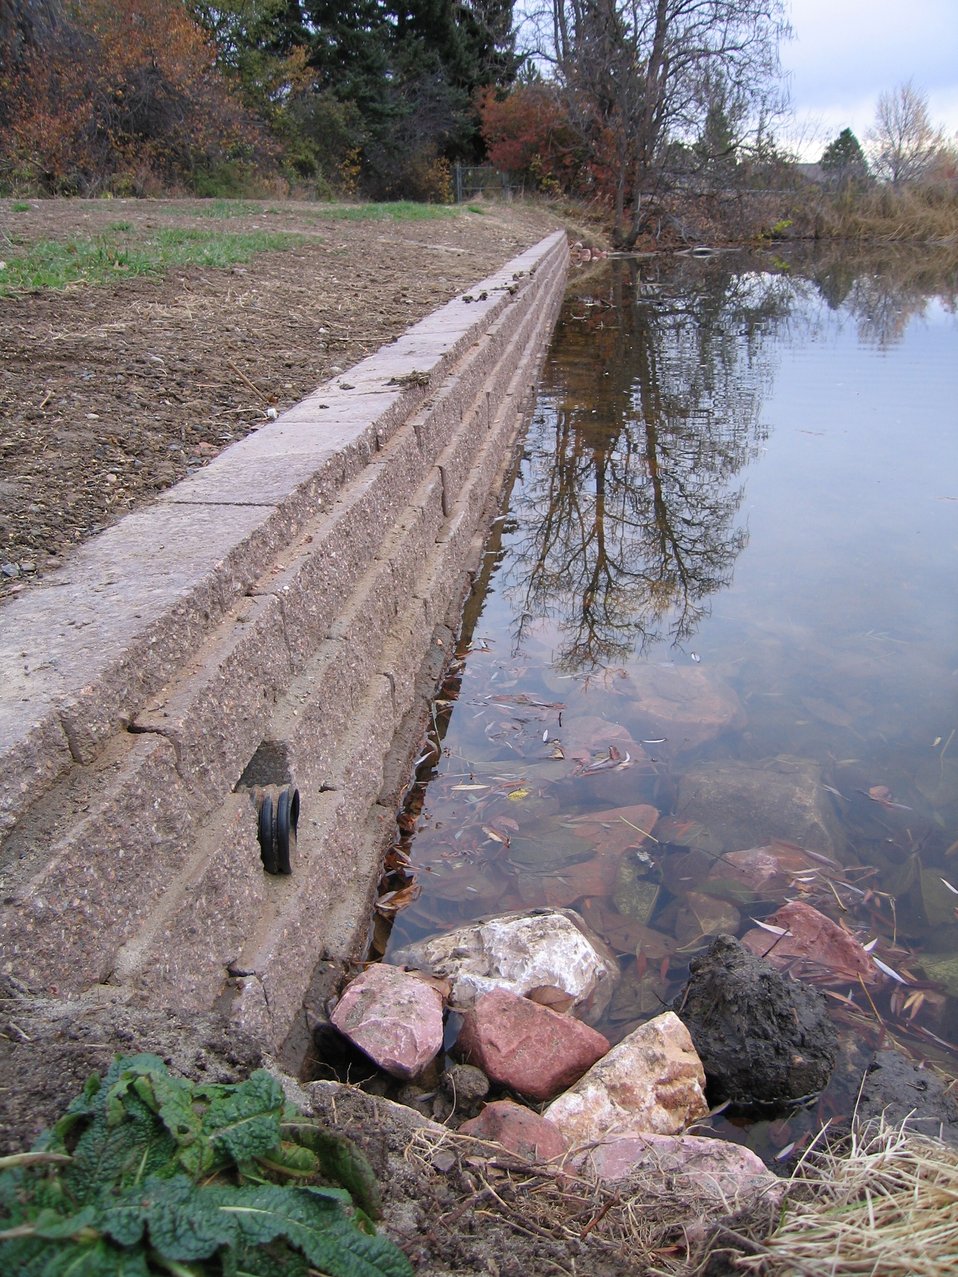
Retaining Wall